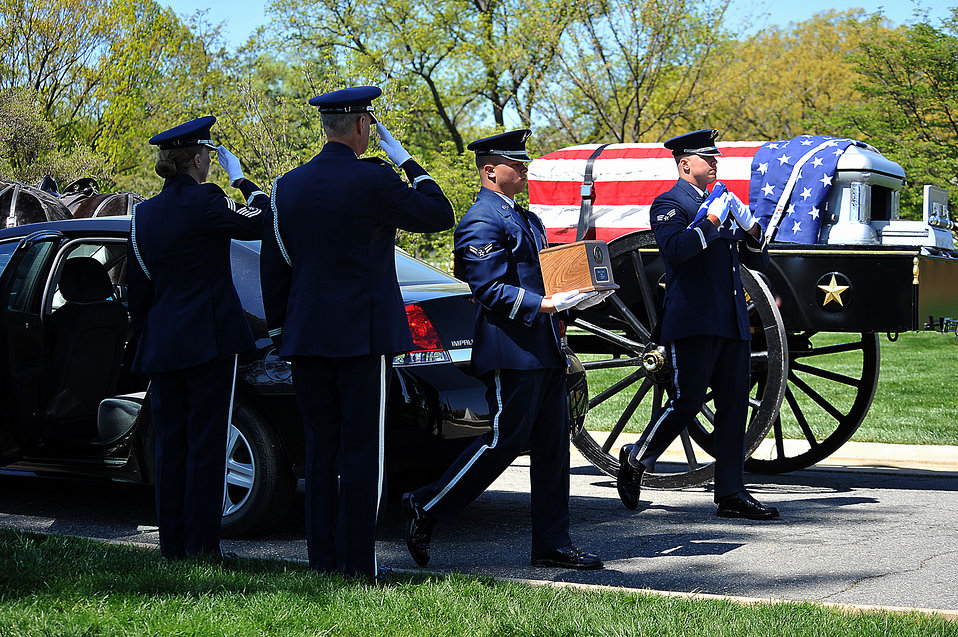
Dignified Transfer

Airman 1st Class Josh Busch, center, carries an urn containing the remains Tech. Sgt. Allen J. Avery while Senior Airman Jeremy Dotson, background, carries a folded American flag during Avery's burial ceremony at Arlington National Cemetery, Va., April 6, 2012. Avery was part of a combat search and rescue mission aboard an HH-53C Super Jolly Green Giant helicopter when they were shot down over Quang Tri province, South Vietnam, April 6, 1972. Saluting in the foreground are Chief Master Sgt. Diane Munson, left, and Col. Charles Cornelisse, a chaplain. The Airmen are with the U.S. Air Force Honor Guard.